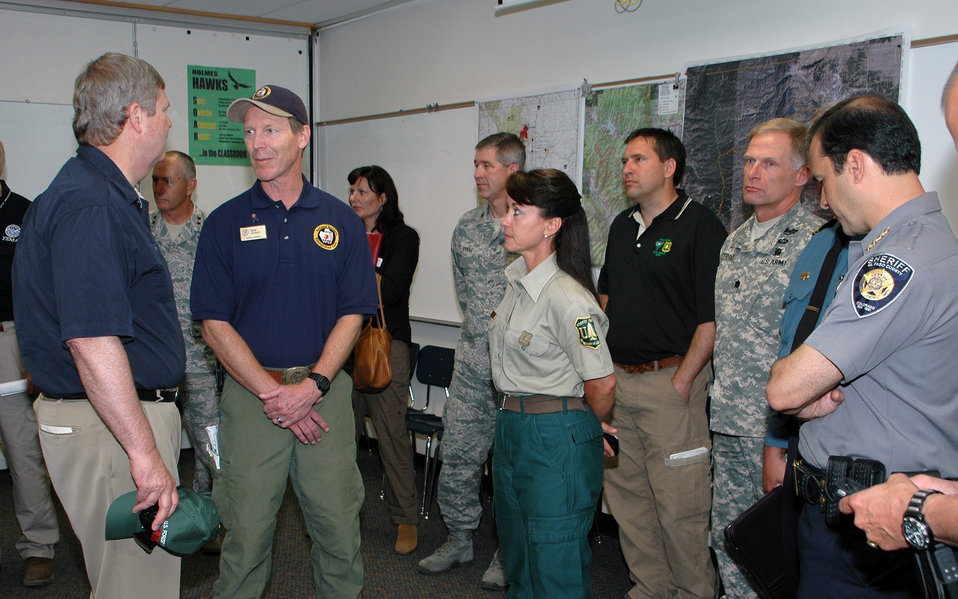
Agriculture Secretary Tom Vilsack (left) speaks with U.S. Forest Service Fire Incident Commander Rich Harvey during his visit to the Waldo Canyon Fire near Colorado Springs, CO on July 3, 2012.